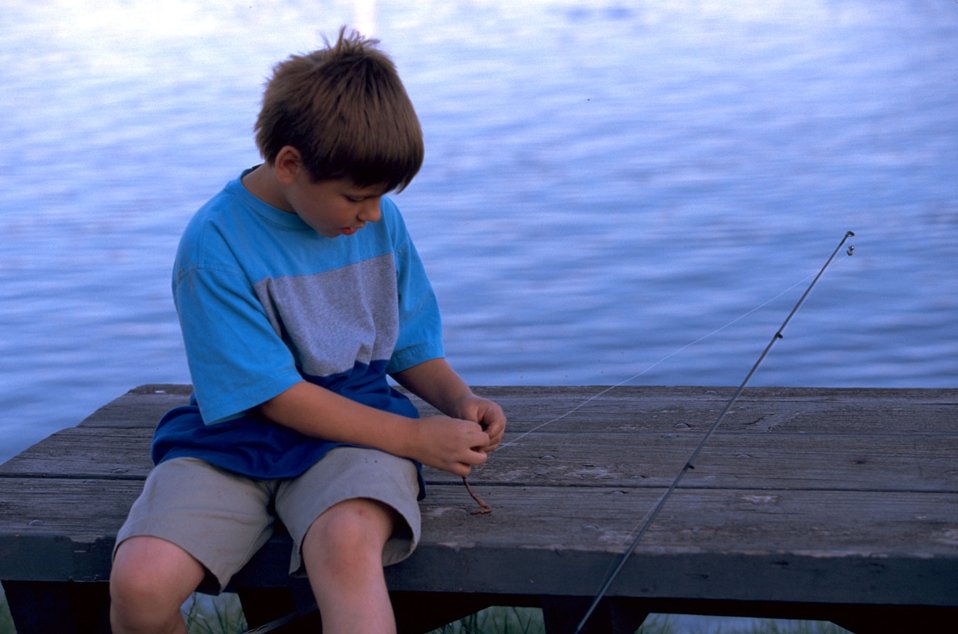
Boy baiting his hook at Holter Lake Campground